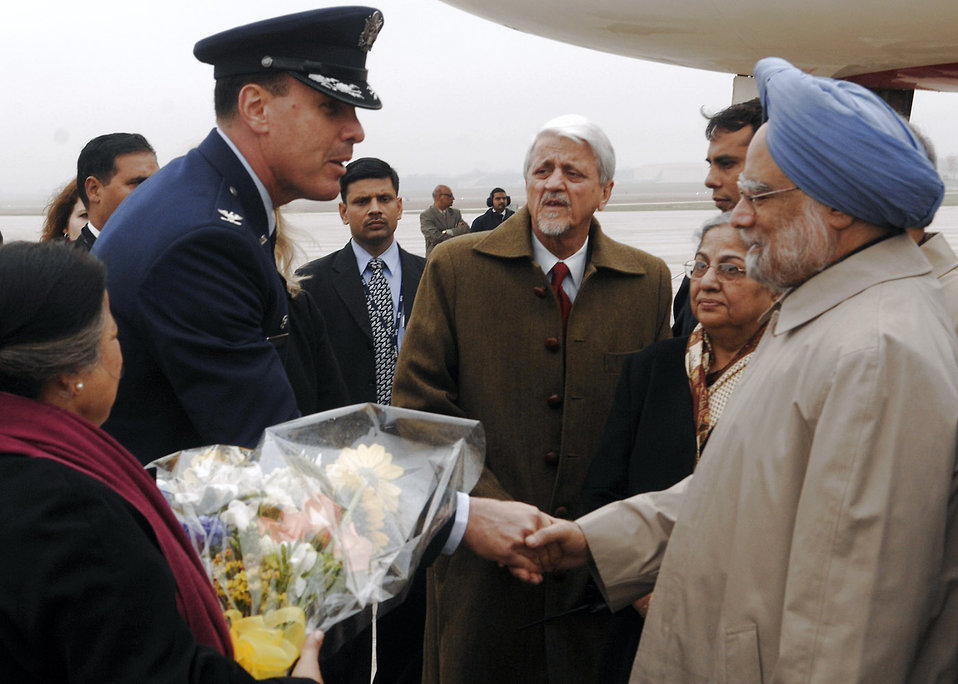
Andrews officials support G-20 Summit

Col. Steven M. Shepro greets Indian Prime Minister Manmohan Singh Nov. 14 at Andrews Air Force Base, Md. The two-day G-20 Summit, hosted by President George W. Bush, brought together world leaders to discuss the increasing global financial crisis, its causes and efforts to resolve it. Colonel Shepro is the 316th Wing commander.